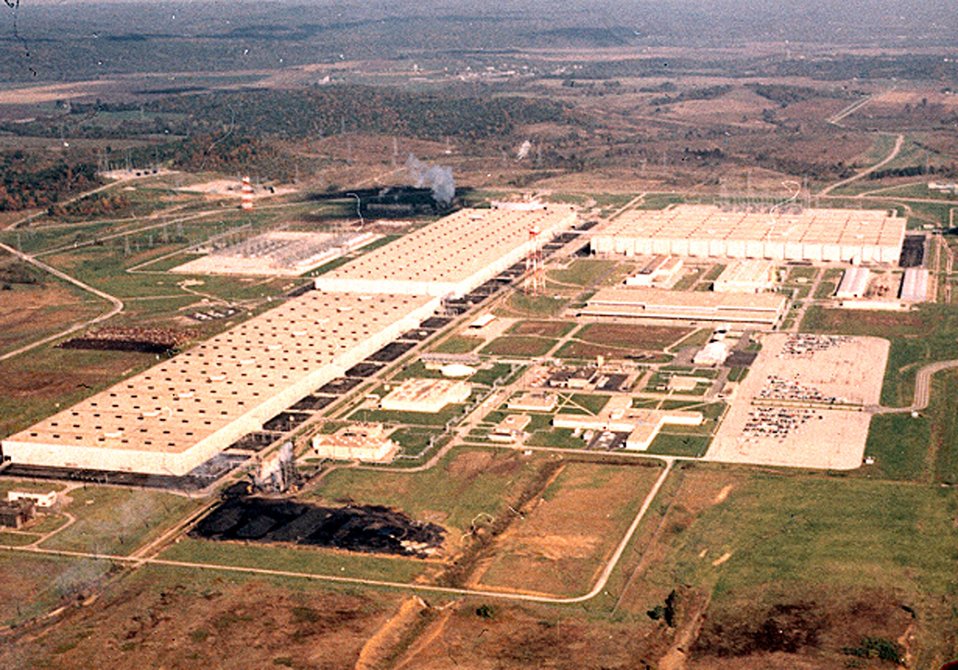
Portsmouth Gaseous Diffusion Plant. c. 1970